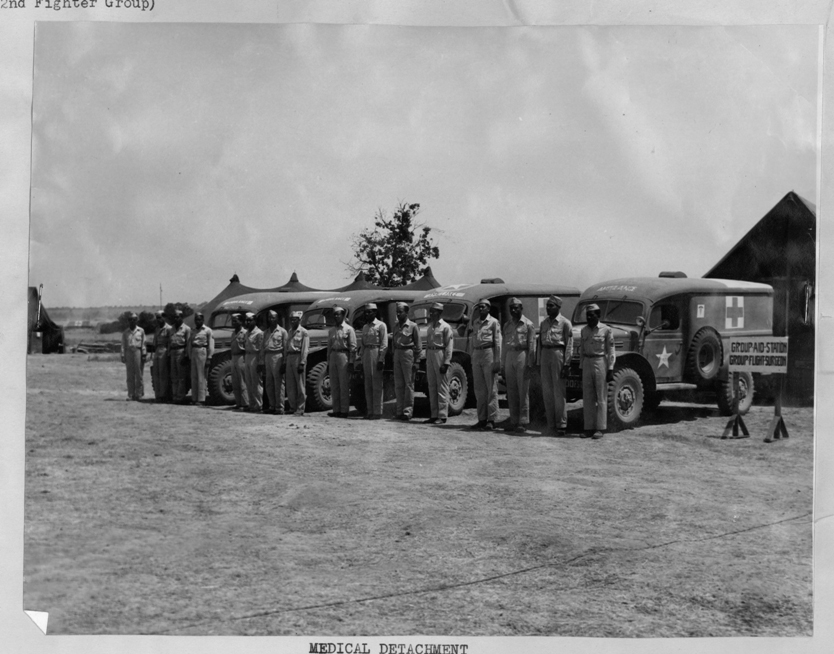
Col. (Dr.) Vance H. Marchbanks Jr.

The 332nd Fighter Group Medical Detachment in 1944.